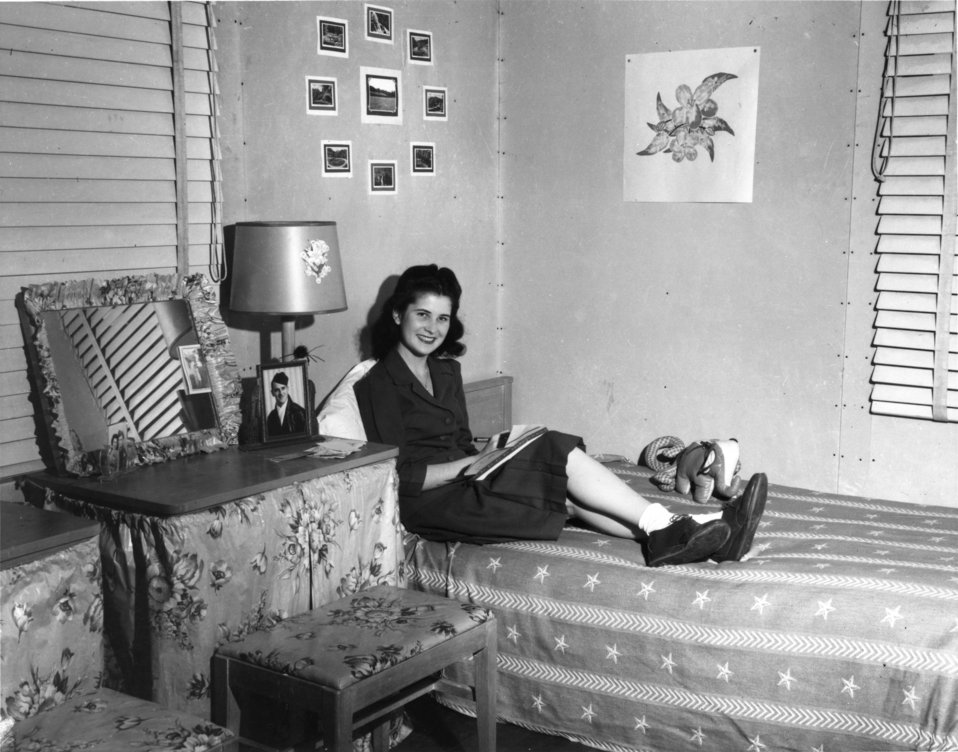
Housing at Oak Ridge